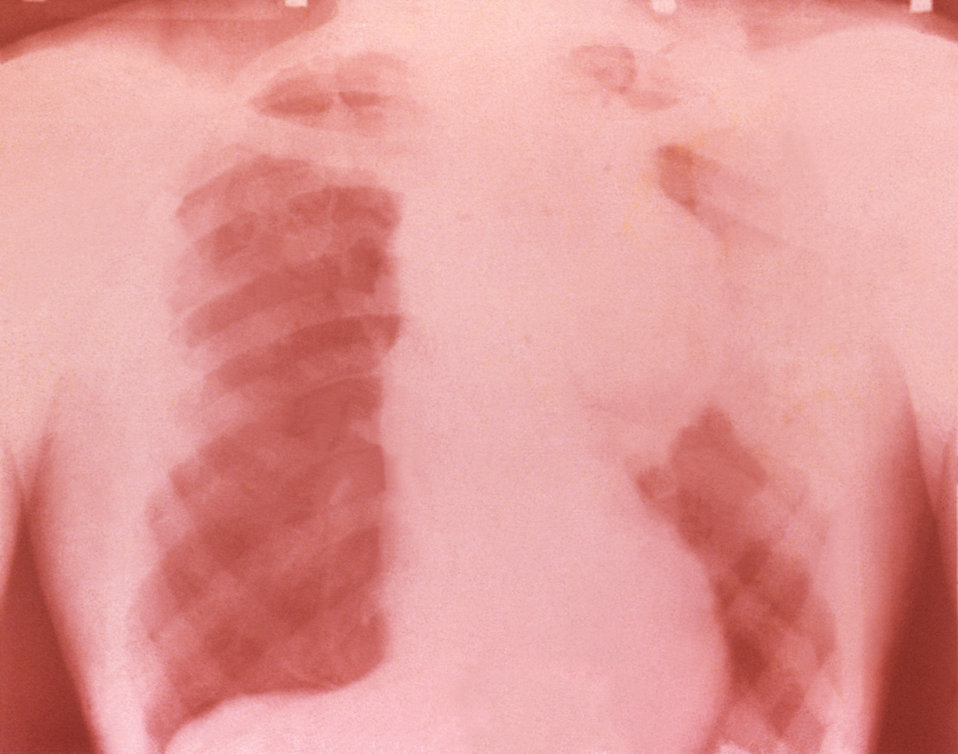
This x-ray depicts changes in the thoracic aorta indicative of an aortic aneurysm in a patient with syphilis.